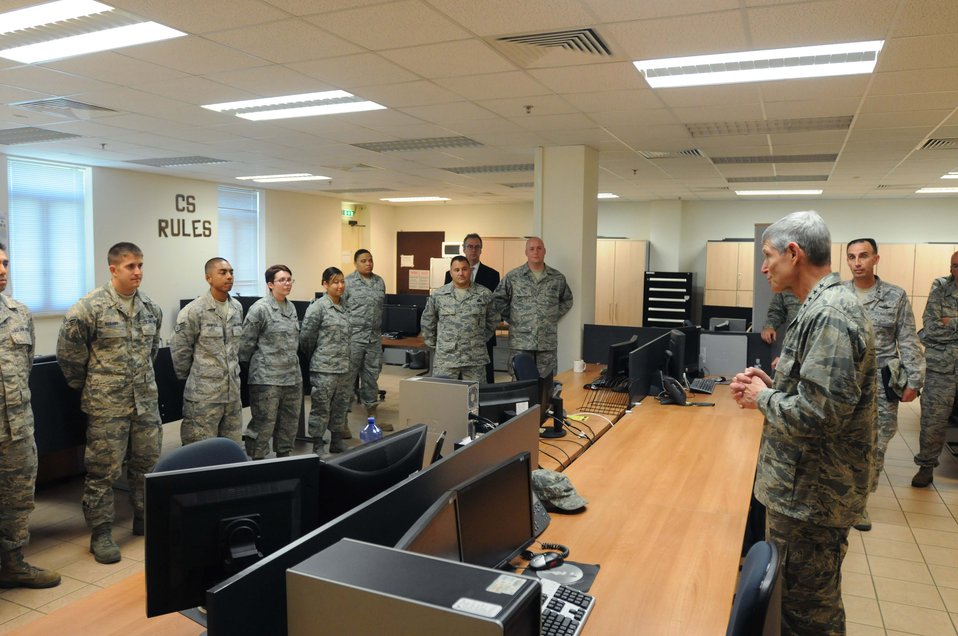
Chief of staff and spouse visit Aviano Air Base

Air Force Chief of Staff Gen. Norton Schwartz talks with Airmen from the 31st Communications Squadron July 12, 2011, at Aviano Air Base, Italy. Schwartz observed the 31st CS mission as part of his visit here.